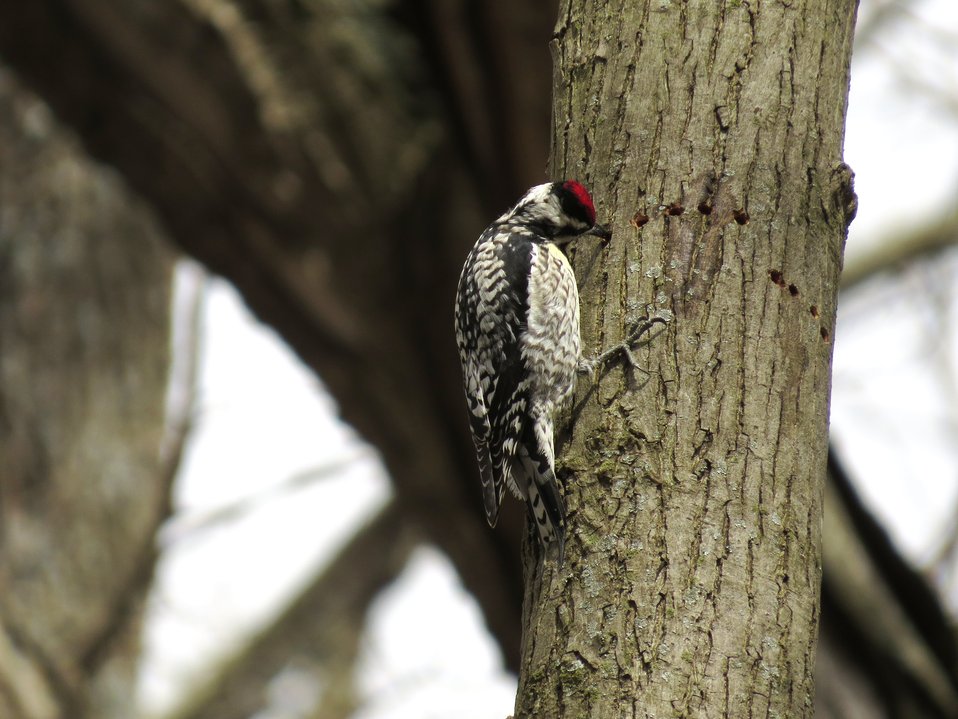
Yellow-bellied Sapsucker